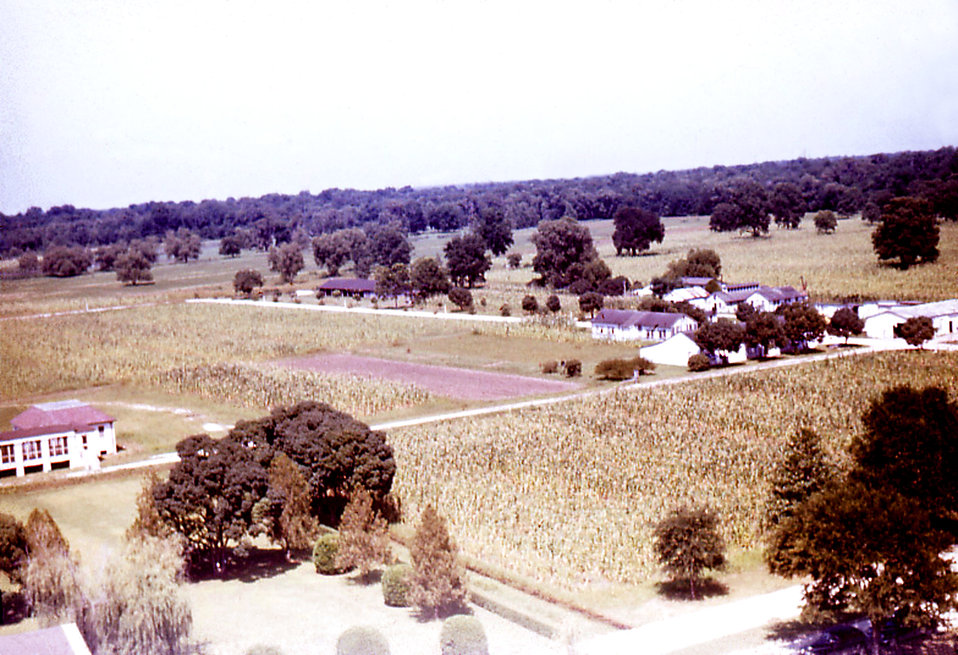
From an historic aerial view, this photograph showed a section of acreage that was part of the Carville, Louisiana Leprosarium's property. Pictured here was land that had been used to raise crops, including corn, hay, and soybeans, in order to feed the facility's dairy herd. The hospital was a self-contained compound with its own power plant, storehouse, patient treatment centers, which included a dental office, food-processing facilities, i.e., a cafeteria, and its own cemetery.The National Hansen's Disease Museum's (NHDM) mission is to collect, preserve and interpret the medical and cultural artifacts of the Carville Historic District. In addition, we want to promote the understanding, identification, and treatment of Hansen's Disease (leprosy). We fulfill this mission by creating and maintaining museum displays, traveling exhibits, publications and a website in order to educate and inform the public on all levels.